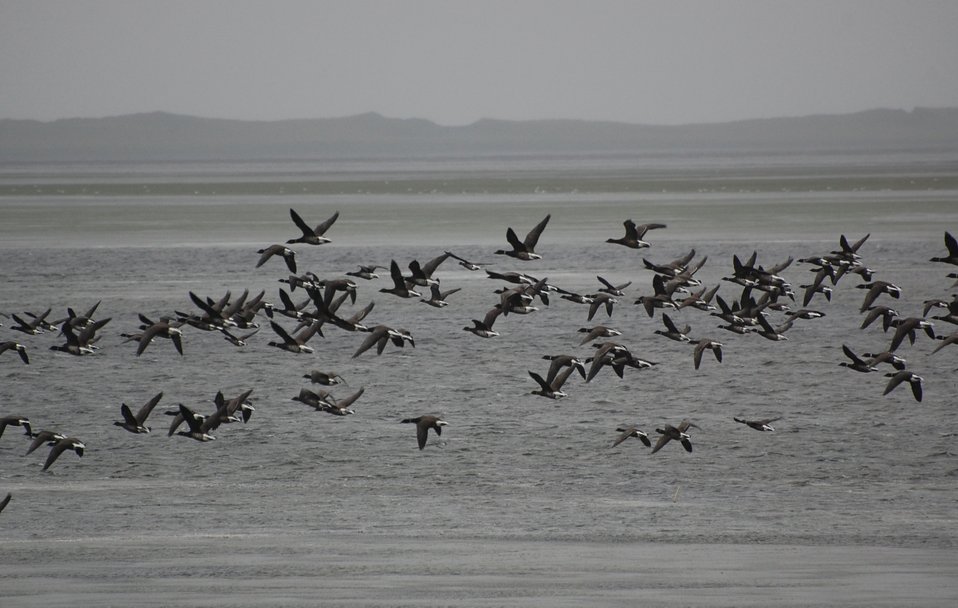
Brant at Izembek Lagoon

Izembek National Wildlife Refuge